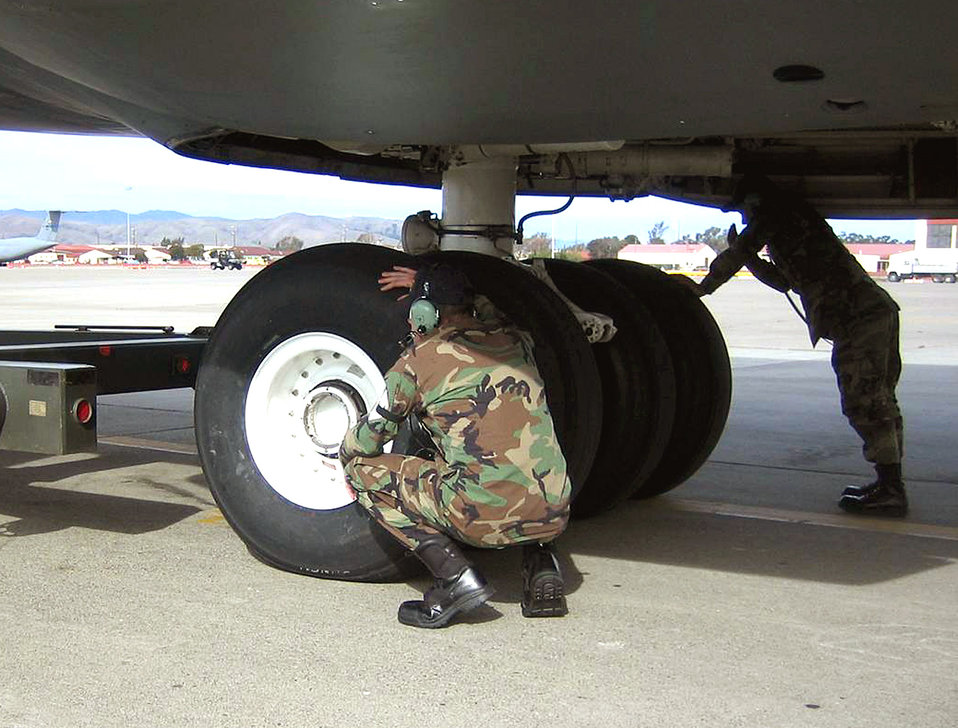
Travis, Robins test wireless aircraft intercom system

Aircraft maintenance Airmen use wireless headsets as part of communication capabilities tests for the Air Force maintenance career fields. In this test, Airmen from the 60th Aircraft Maintenance Squadron at Travis Air Force Base, Calif., practice towing a C-5 Galaxy using wireless communications. The test was part of an initiative by the Air Mobiliy Warfare Center's Air Mobility Battlelab at Fort Dix, N.J.